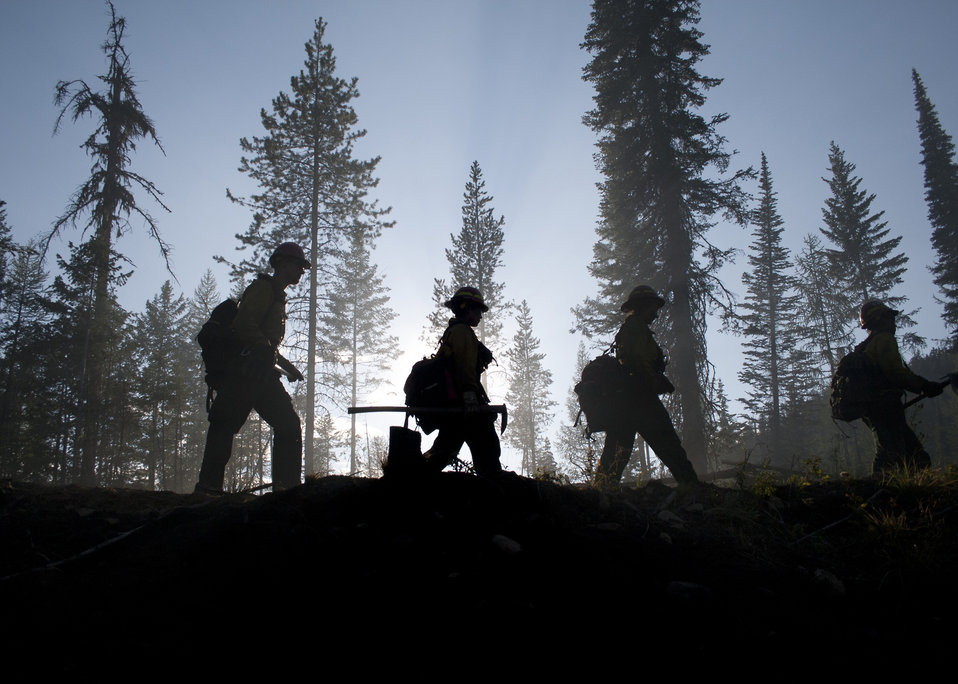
Firefighters supported by three fire engines, two helicopters, two water tenders, a dozer and an air tanker battled to contain the 90 acre Rogers Fire located on Mt. Rogers five miles west of Aladdin, WA on the Colville National Forest. Firefighters worked under adverse conditions with steep terrain and gusting winds to reduce the loss of timber and protect the Rogers Mountain Trail. The Rogers Fire began on Aug. 9, 2011 and was controlled by Aug. 19, 2011 with mop up crews ensuring that no flare-ups occurred. Colville National Forest has 1.1 million acres in northeastern Washington and includes the Kettle River, Selkirk Mountain ranges, and the upper reaches of the Columbia River.